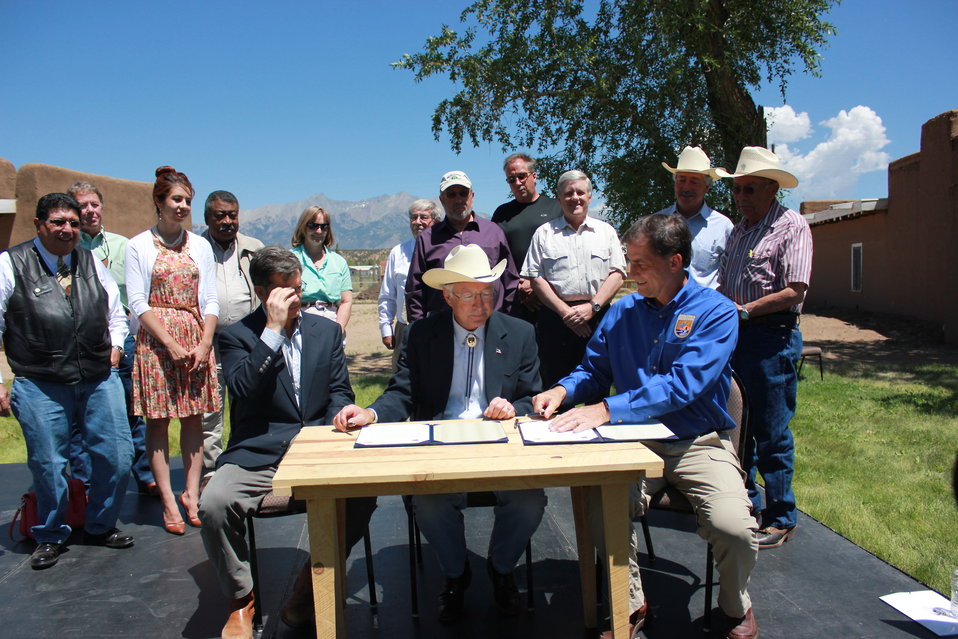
Historic Conservation Easement in Sangre de Cristo Mountains